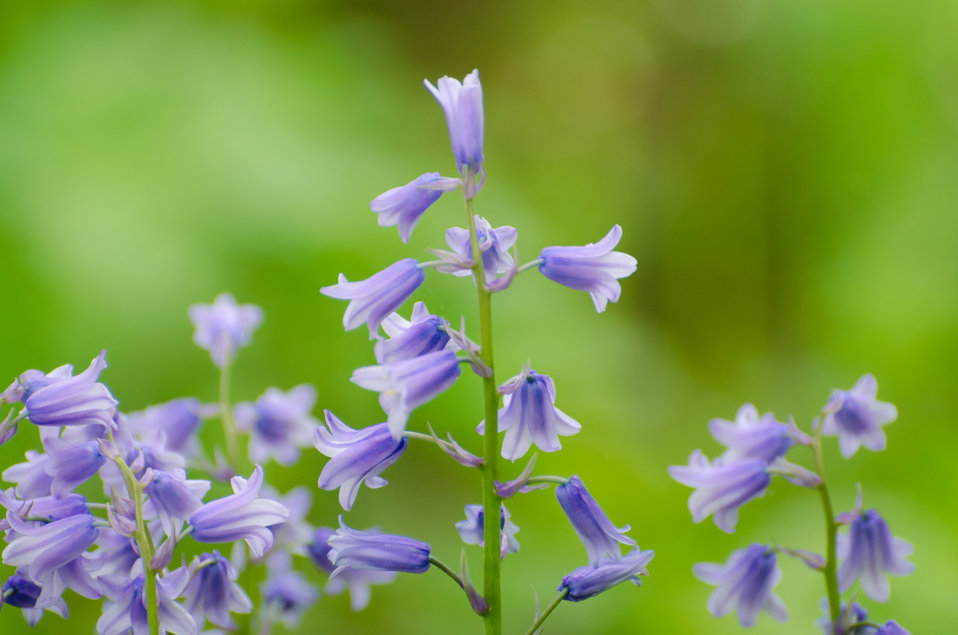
Flowers

Summer flowers.